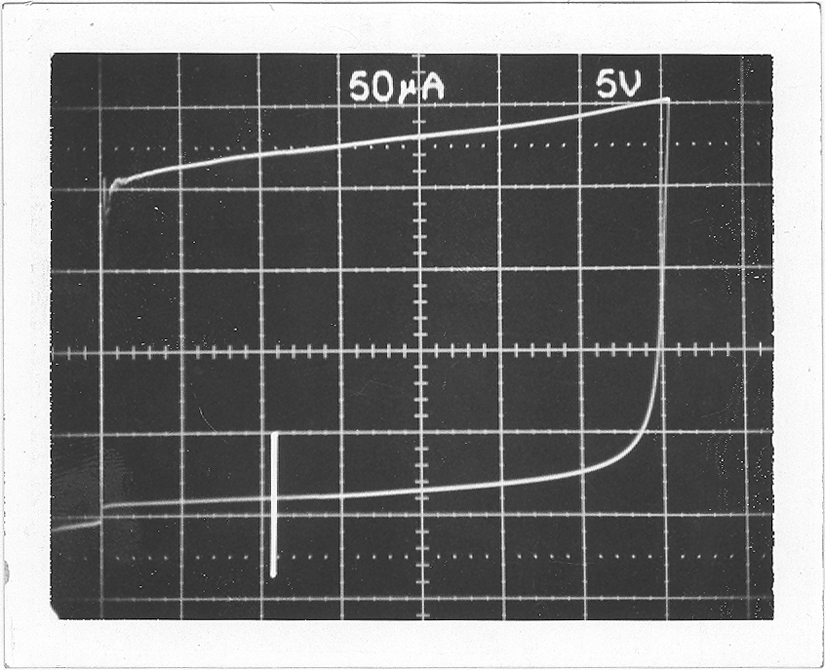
Oscilloscope traces

(1989) Original photo of oscilloscope traces (double exposure)
From the History of NIST Quantum Voltage Standards